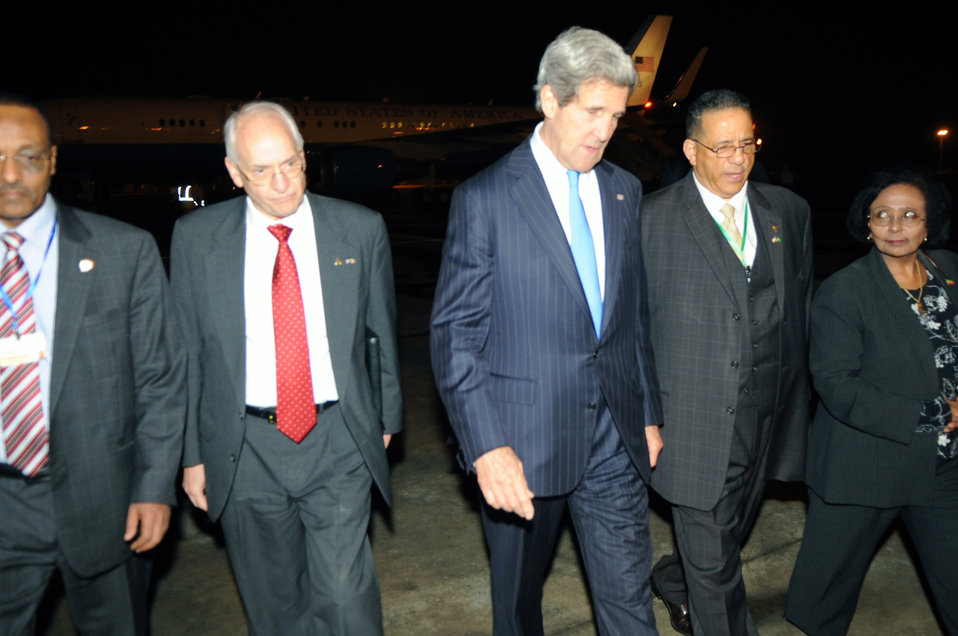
Secretary Kerry Walks Across the Tarmac Upon Landing in Addis Ababa, Ethiopia

U.S. Secretary of State John Kerry walks across the tarmac after landing in Addis Ababa, Ethiopia, on May 24, 2013, for the Africa Union 50th anniversary meeting.